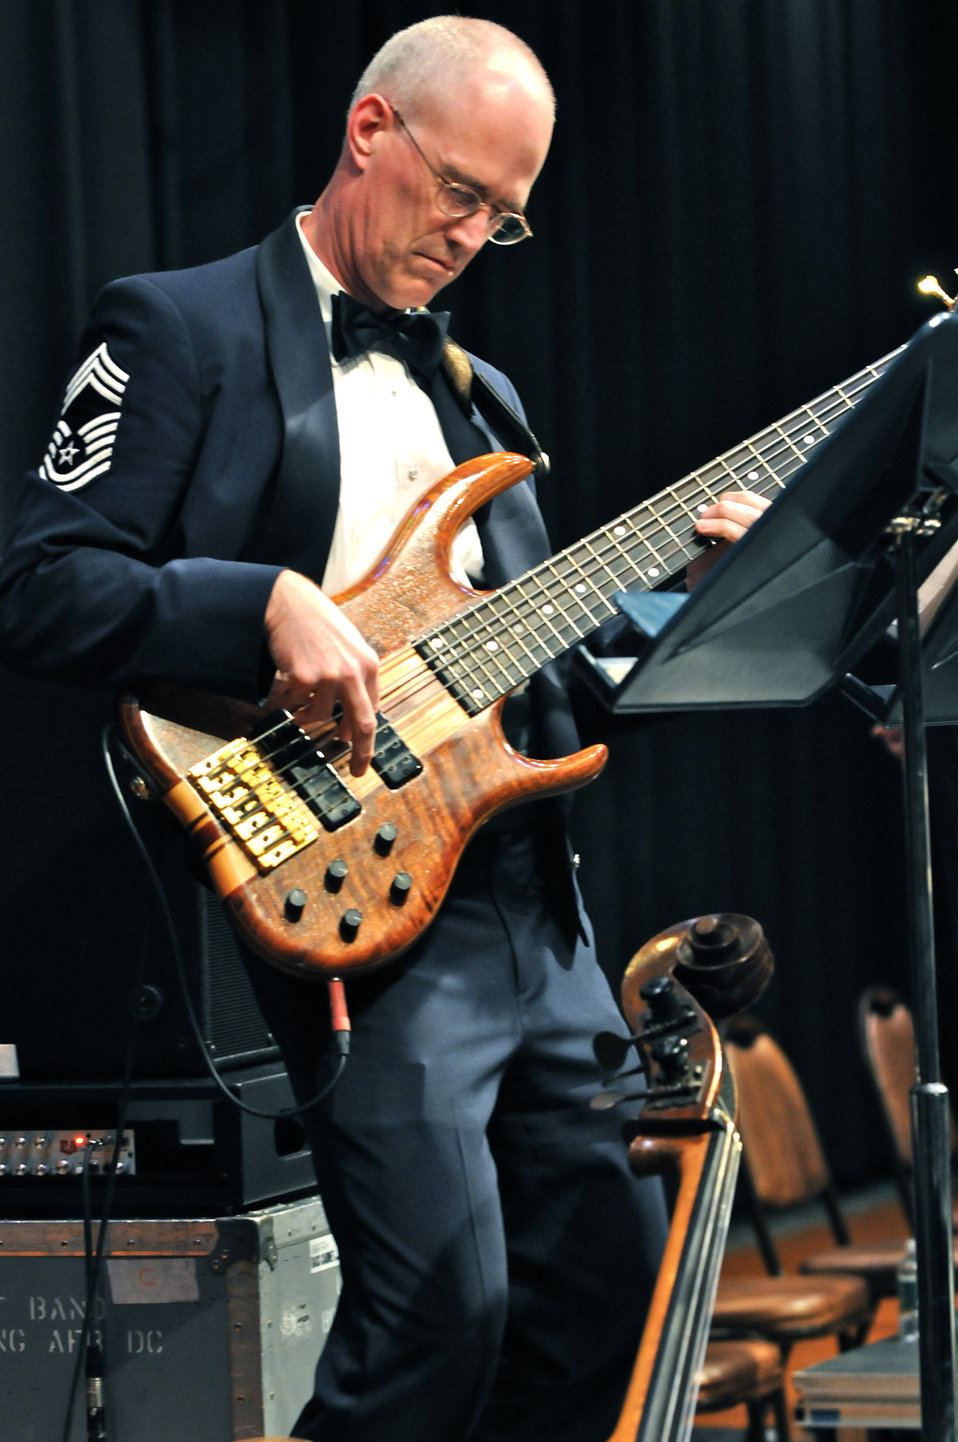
Airmen of Note wrap up

Chief Master Sgt. Paul Henry performs a solo March 16, 2011, at Bassett High School in Bassett, Va., as part of the Airmen of Note 2011 Spring Tour through Virginia, Tennessee, Mississippi and Arkansas. Chief Henry is a bassist with the Air Force Band Airmen of Note.